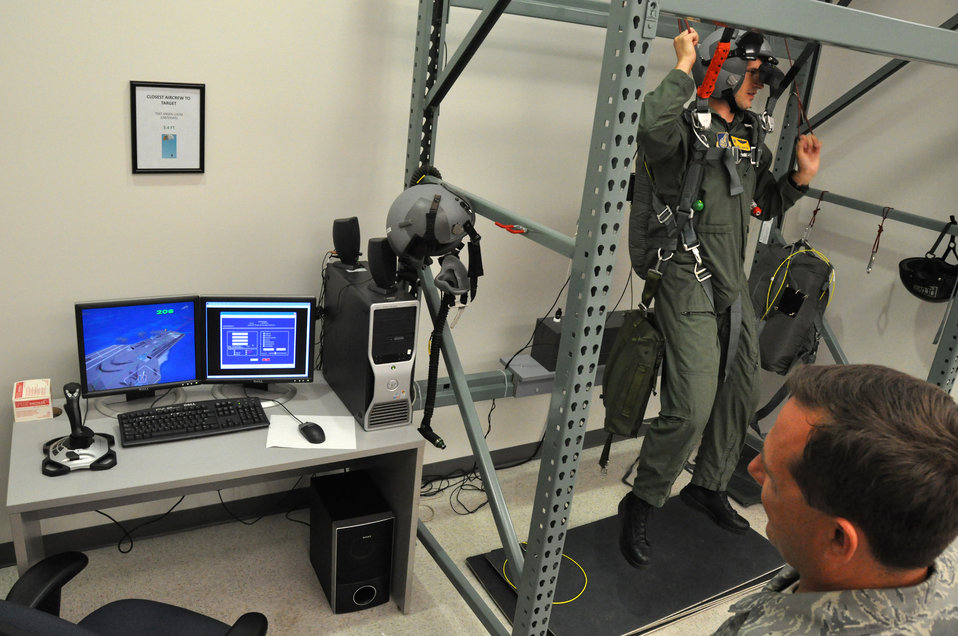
SERE Instructors

Tech Sgt. Sherwood Brown watches as Maj. Will Martin, a pilot with the 535th Airlift Squadron at Hickam Air Force Base, Hawaii, guides his virtual parachute as he attempts to land on an aircraft carrier during a refresher parachute training class Jan 24. Aircrews require annual non-ejection parachute training so they are current according to Air Force instructions. Sergeant Brown is a survival, evasion, resistance, escape, or SERE, instructor with the 15th Airlift Wing at Hickam.